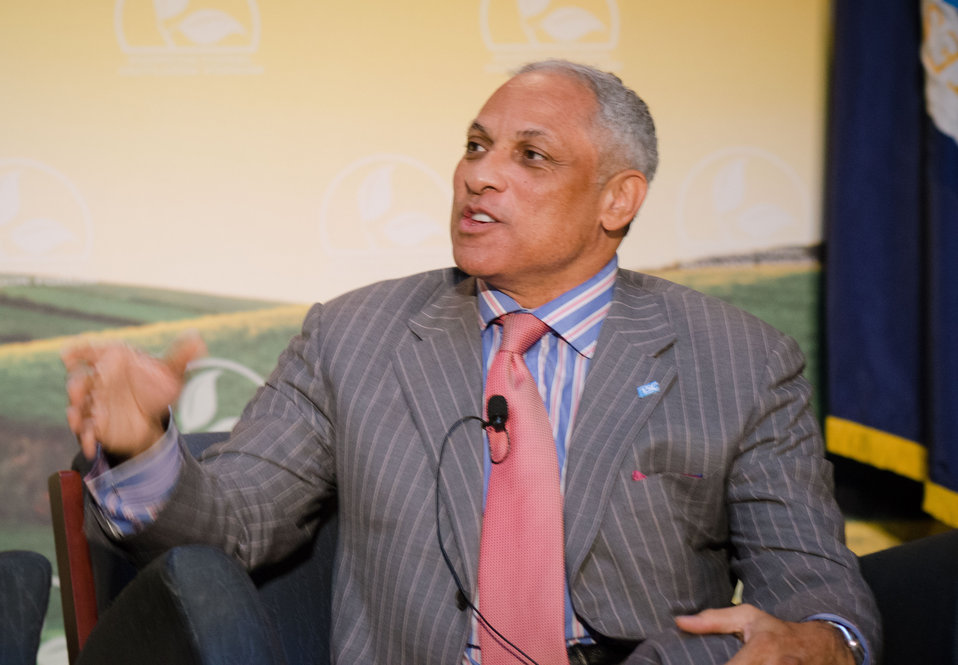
At the 2012 Agricultural Outlook Forum, “Moving Agriculture Forward” in Arlington, VA, on Thursday, February 23, 2012, 7 former Secretaries of Agriculture sat on the plenary panel “Visions of the Future” hosted by current Agriculture Secretary Tom Vilsack. Former Congressman Mike Espy (MS) speaks out during the panel discussions.